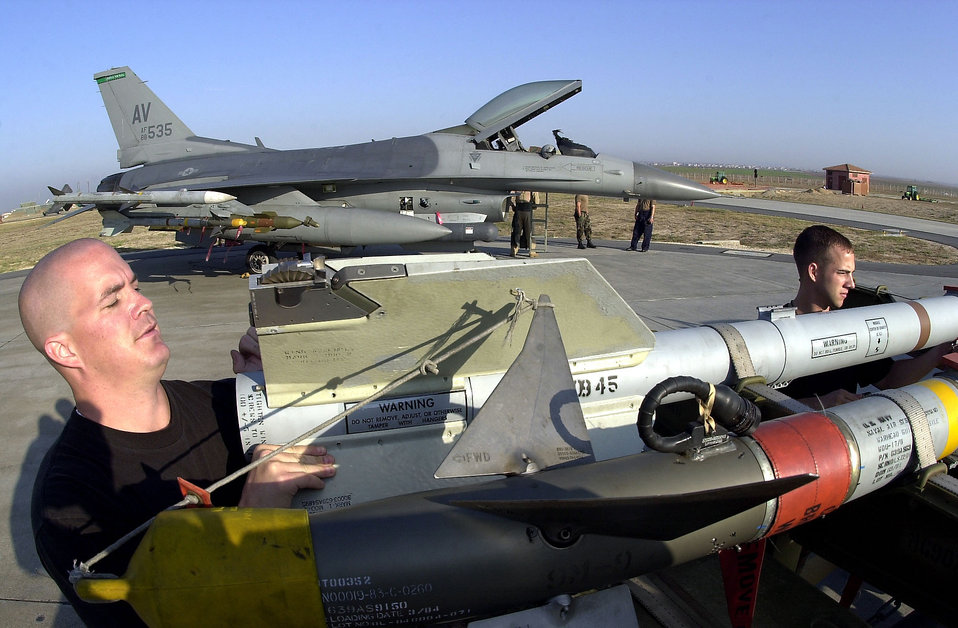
Lock and Load

INCIRLIK AIR BASE, Turkey -- Staff Sgt. Jeff Lease, left, who is deployed to here from the 35th Maintenance Squadron at Misawa Air Base, Japan, and Senior Airman Ben Ramaekers, from the 18th Munitions Squadron at Kadena AB, Japan, unload AIM-9 Sidewinder missiles to complete the 555th Fighter Squadron’s F-16 Fighting Falcon munitions package. Specialists from numerous bases across the world deploy to Incirlik enhancing the 39th Maintenance Squadron munitions flight’s ability to maintain a constant store of munitions in support of Operation Northern Watch.